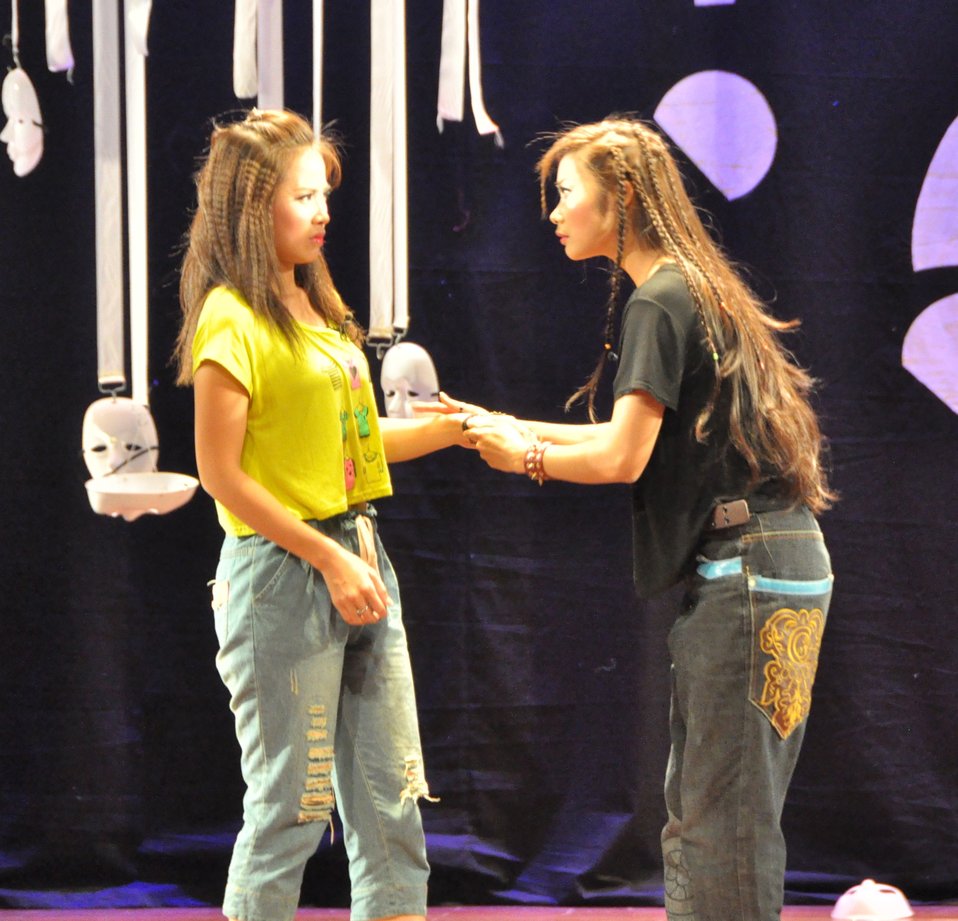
PEPFAR Musical Questions and Exclamations

Hanoi, May 17, 2013